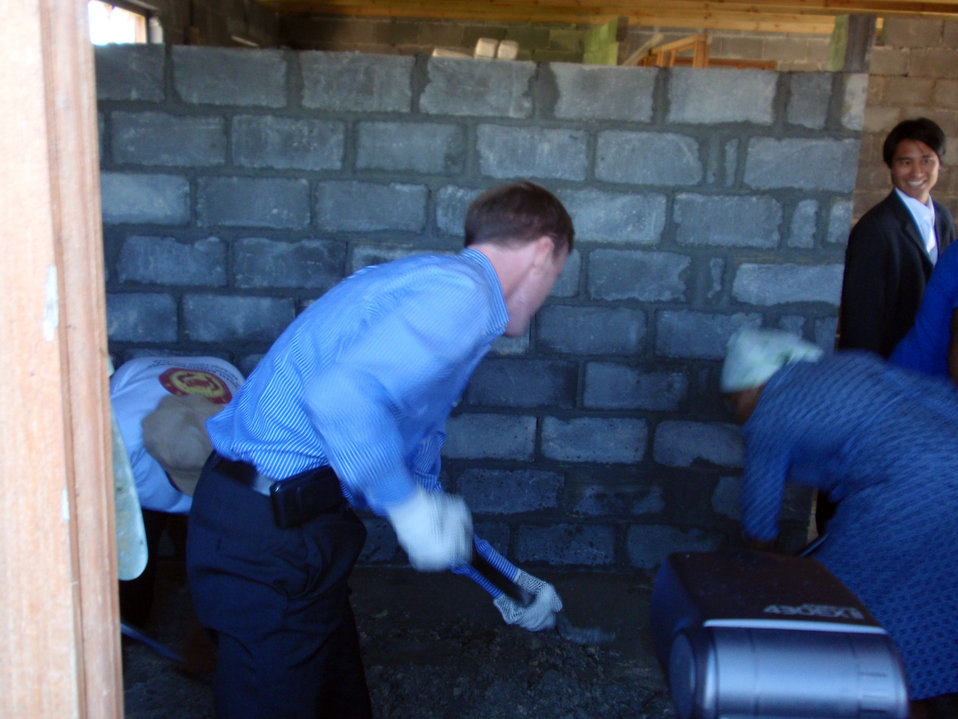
Secretary Clinton Visits Victoria Mxenge Housing Development

U.S. Department of State Deputy Chief of Staff Jake Sullivan gets to work at the Victoria Mxenge Housing Development in Cape Town, South Africa August 8, 2009 during a visit by U.S. Secretary of State Hillary Rodham Clinton.